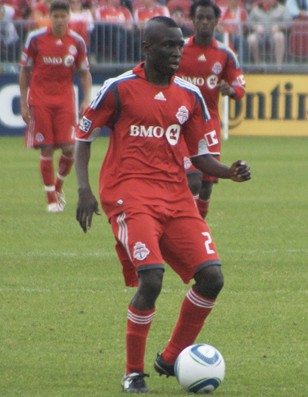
no original description